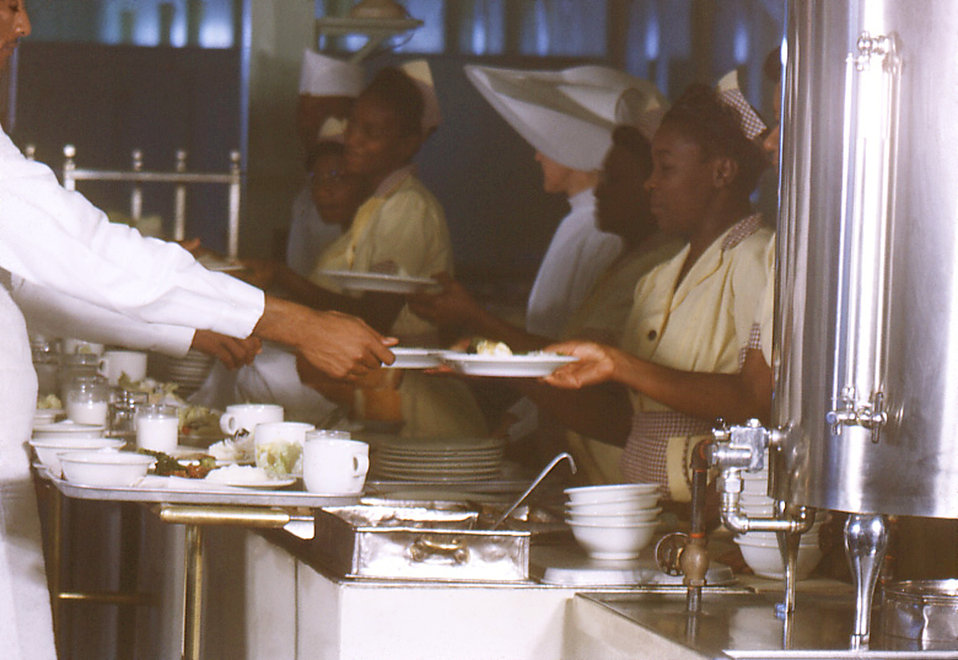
Depicted in this historic image was the active serving line, in what was the Carville, Louisiana Leprosarium's cafeteria, which had a patient seating capacity of 400. Meals were served "cafeteria style", and medications were also administered in this dining area."Patients of the U.S. Marine Hospital in Carville, Louisiana, produced a set of 35 mm slides around 1950 from which this image was derived. In 2002, a patient's son donated the set, the only one known in existence, to the museum. The father, a patient at Carville for several years, brought these slides home around 1950 to give his family a snapshot of life at the national leprosarium. The act of quarantining patients for leprosy (HD) remained law in the state of Louisiana until 1957."